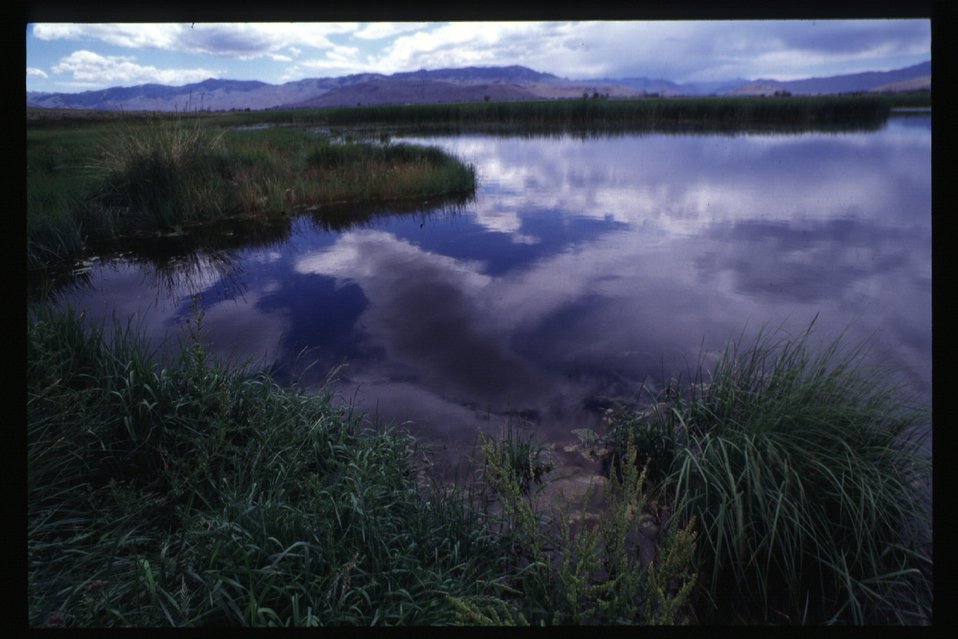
Wetlands, Chilly Slough Wildflowers and grasses Overview of south unit Challis Field Office UCSC Upper Columbia Salmon Clearwater District